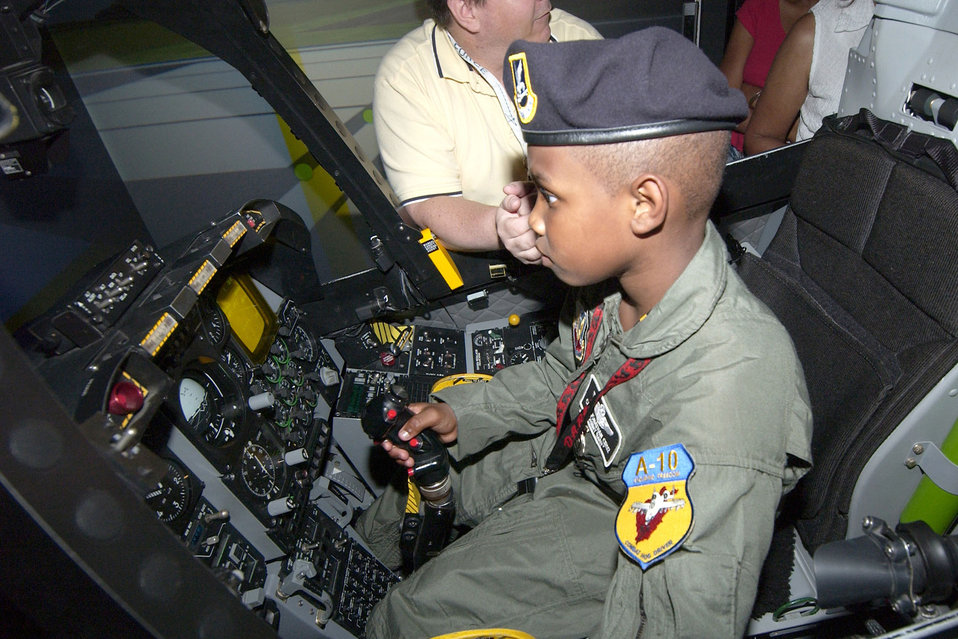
Young hero

POPE AIR FORCE BASE, N.C. -- Jonathan Cruz, an 8-year-old survivor of non-Hodgkin's Lymphoma, got a chance to in fly an A-10 Thunderbolt II flight simulator here. Jonathan was given a tour of the base and received numerous awards and gifts.